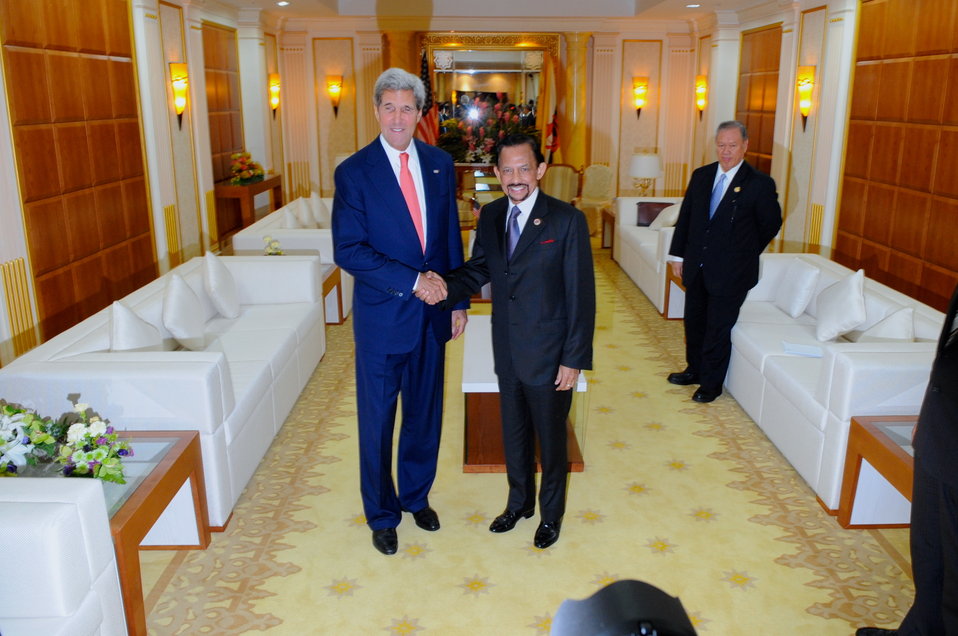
Secretary Kerry Meets With Sultan Bolkiah of Brunei

U.S. Secretary of State John Kerry meets with Sultan Haji Hassanai Bolkiah of Brunei after the East Asia Summit in Bandar Seri Begawan, Brunei, on October 10, 2013.